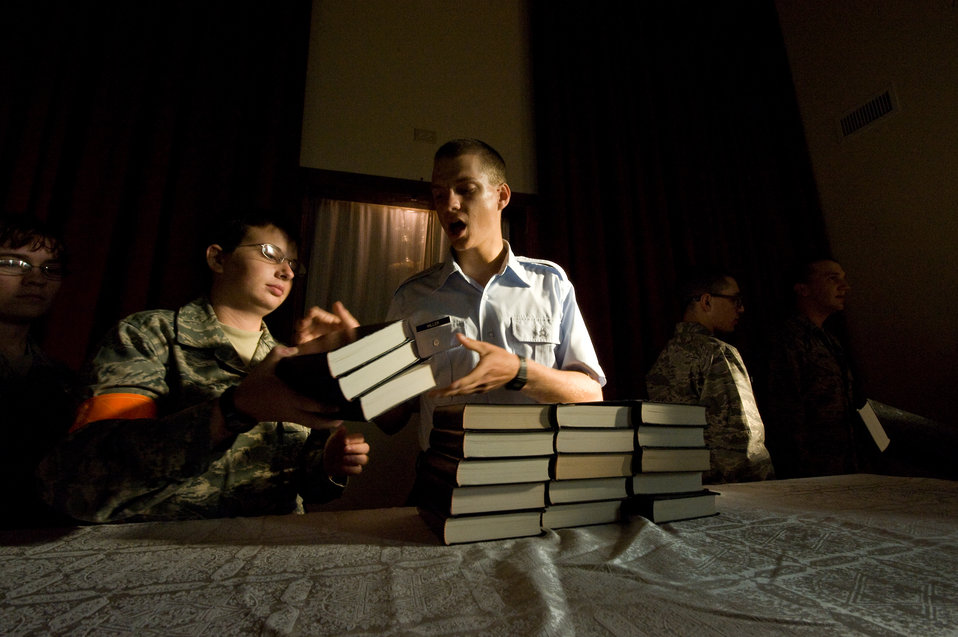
U.S. Air Force Chaplaincy

Airman Basic Adam Miller and others sing Shabbat Shalom while he collects siddur, prayer books from Trainee Lilly Bezuidenhout, following the Ma'ariv prayer service for the setting of the sun on Friday, Sept. 4, 2009 at Lackland Air Force Base's Airmen Memorial Chapel. This was part of the the evening le'il shabbat service where more than 25 basic military trainees and other attendees participated in a religious education class, then Ma'ariv prayer service for the setting of the sun, followed by a meal provided by lay leaders supporting the service. Because of training schedules some ceremonies and events are earlier than traditionally held. By order of commanders, those who want to attend any or all religious services of their choosing are given full permission and opportunity to do so.